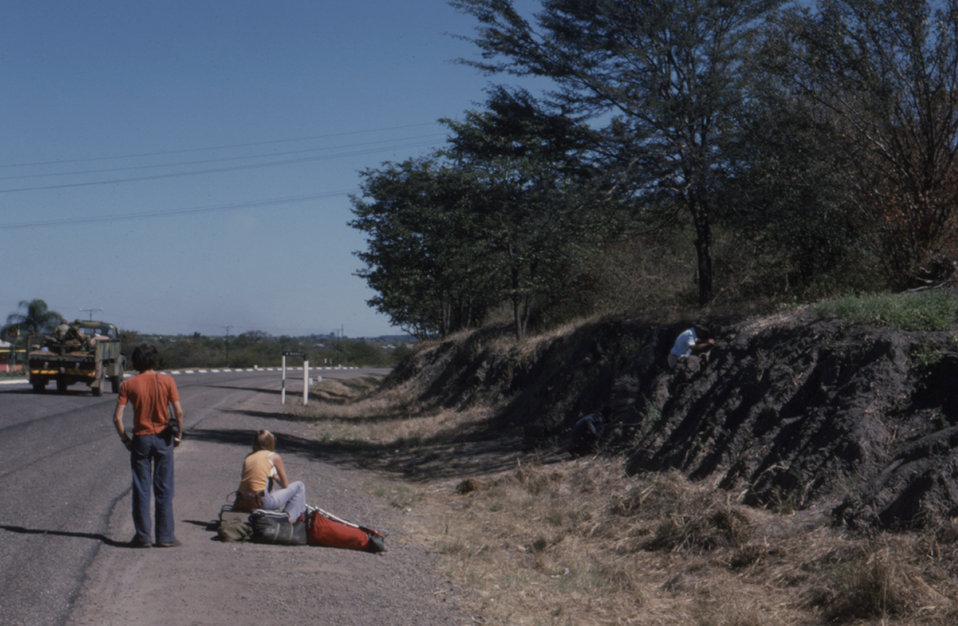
This popular Rhodesian hitchhiking spot was visited by 2 travelers who were later hospitalized during the country's 1975 Marburg outbreak.